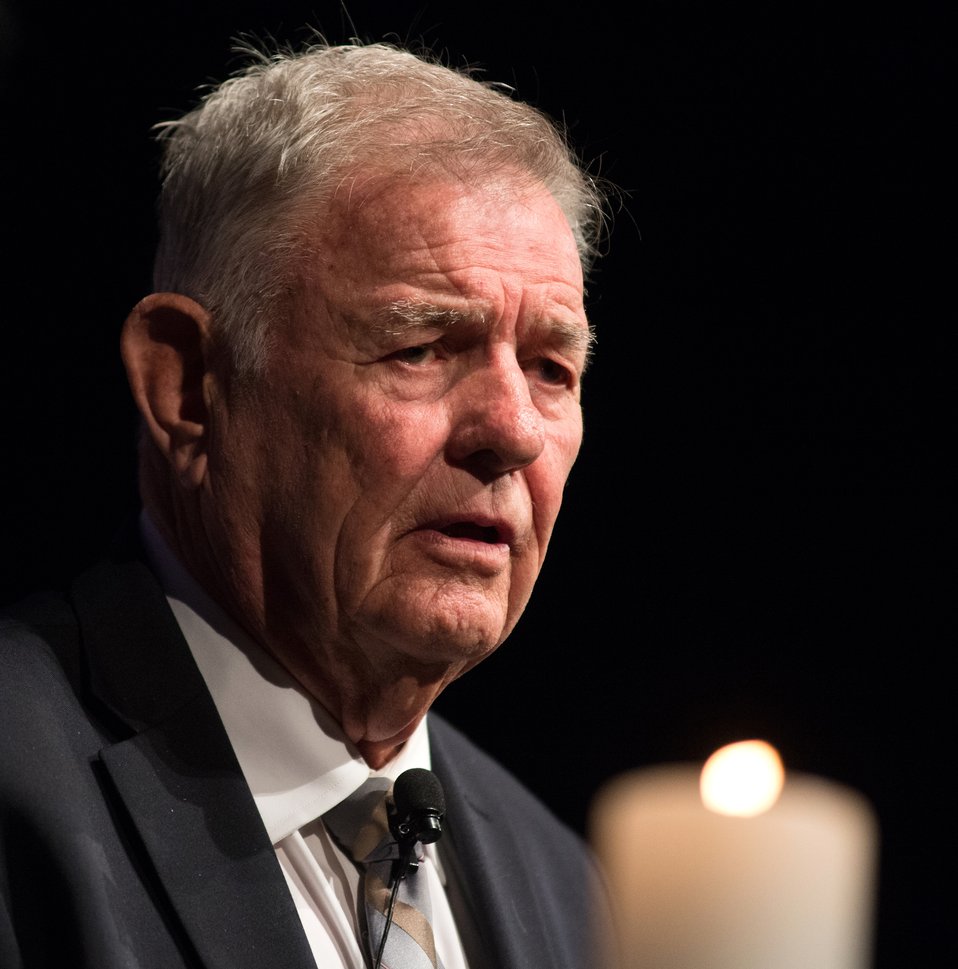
During WW2, Jimmy Gentry, was a soldier in the U.S.Army's 42nd Rainbow Division that helped liberate the Dachau Concentration Camp. Jimmy told of his experiences during the candle lighting ceremony, of the 2013 Federal Inter-Agency Holocaust Remembrance Day, at the Lincoln Theater, on Wednesday, April 17, 2013, in Washington, D.C. Since the 1979 President’s Commission on the Holocaust, an annual proclamation signed by the President of the United States recognizes the importance of remembering the atrocities of the Holocaust that should never be forgotten or be ignored.